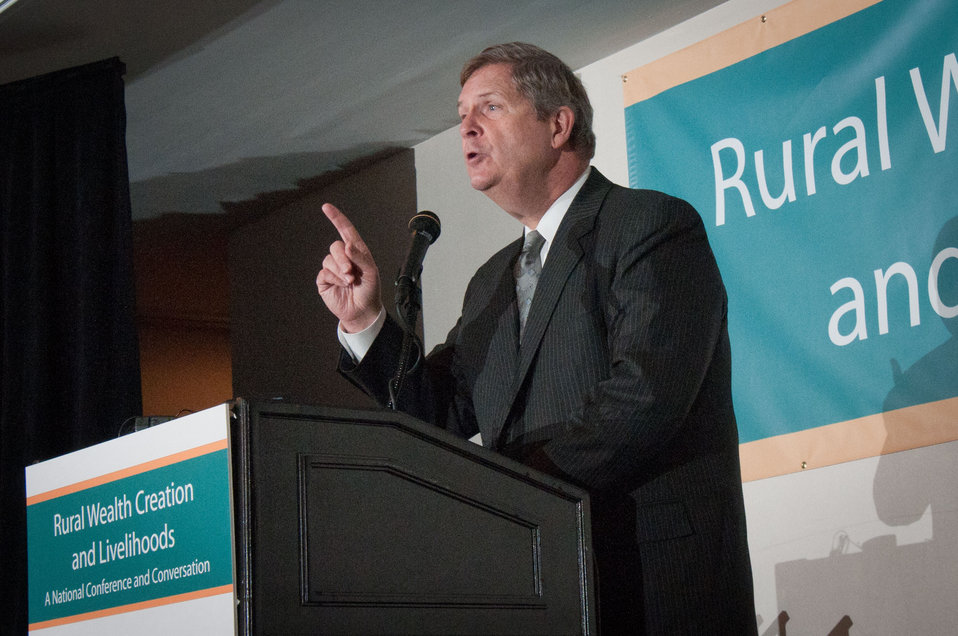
U.S. Department of Agriculture (USDA) Secretary Tom Vilsack responded to several questions following his keynote address to the Rural Wealth Creation and Livelihoods national conference for practitioners, researchers and policymakers, held at the Dupont Hotel, Washington DC, on Monday October 3, 2011. USDA partnered with the Ford Foundation to sponsor the conference.